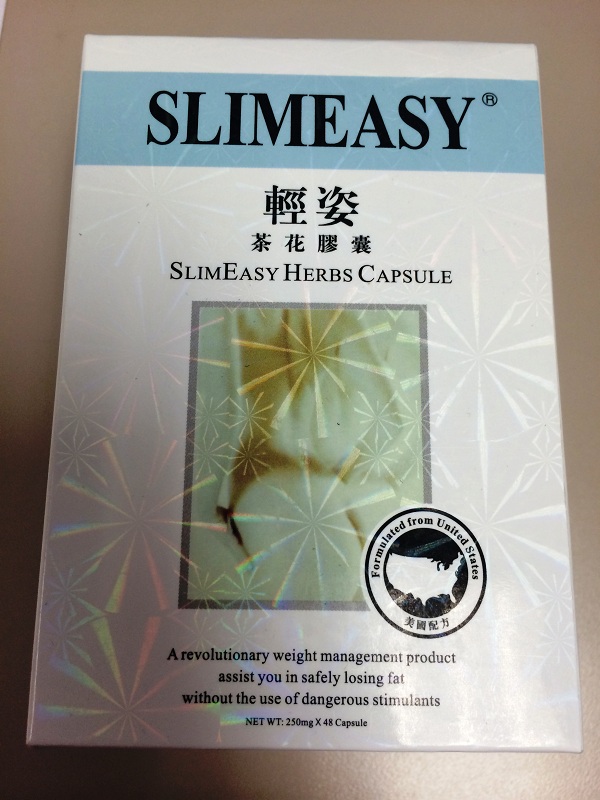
RECALLED - Reduce Weight Fruta Planta

February 4, 2014 – Product Recall – MyNicKnaxs, LLC. Issues a Voluntary Nationwide and International Recall of All Weight Loss Formulas of Reduce Weight Fruta Planta.